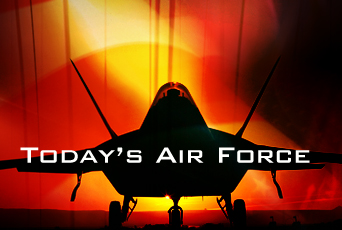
Latest 'Today's Air Force' now available